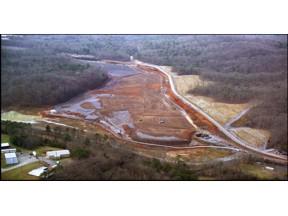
Melton Valley Site

An aerial photo of Melton Valley before cleanup activities had begun. The site was completed on September 30, 2006.